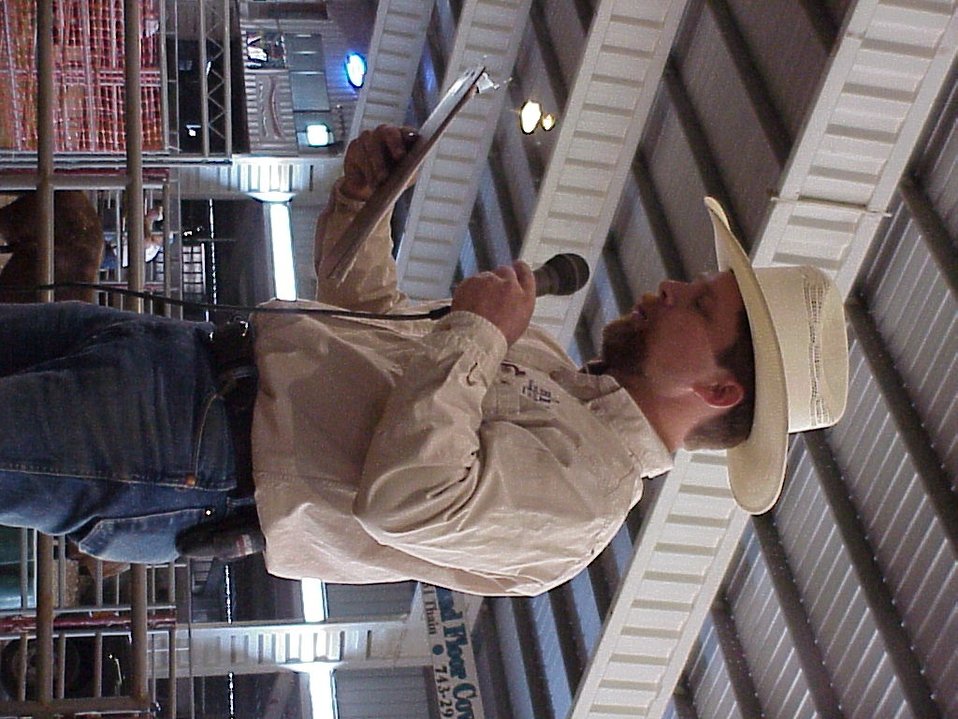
Lewiston Wild Horse and Burro Adoption Program Auction WHB indoor auction Cottonwood Field Office UCSC Upper Columbia Salmon Clearwater District